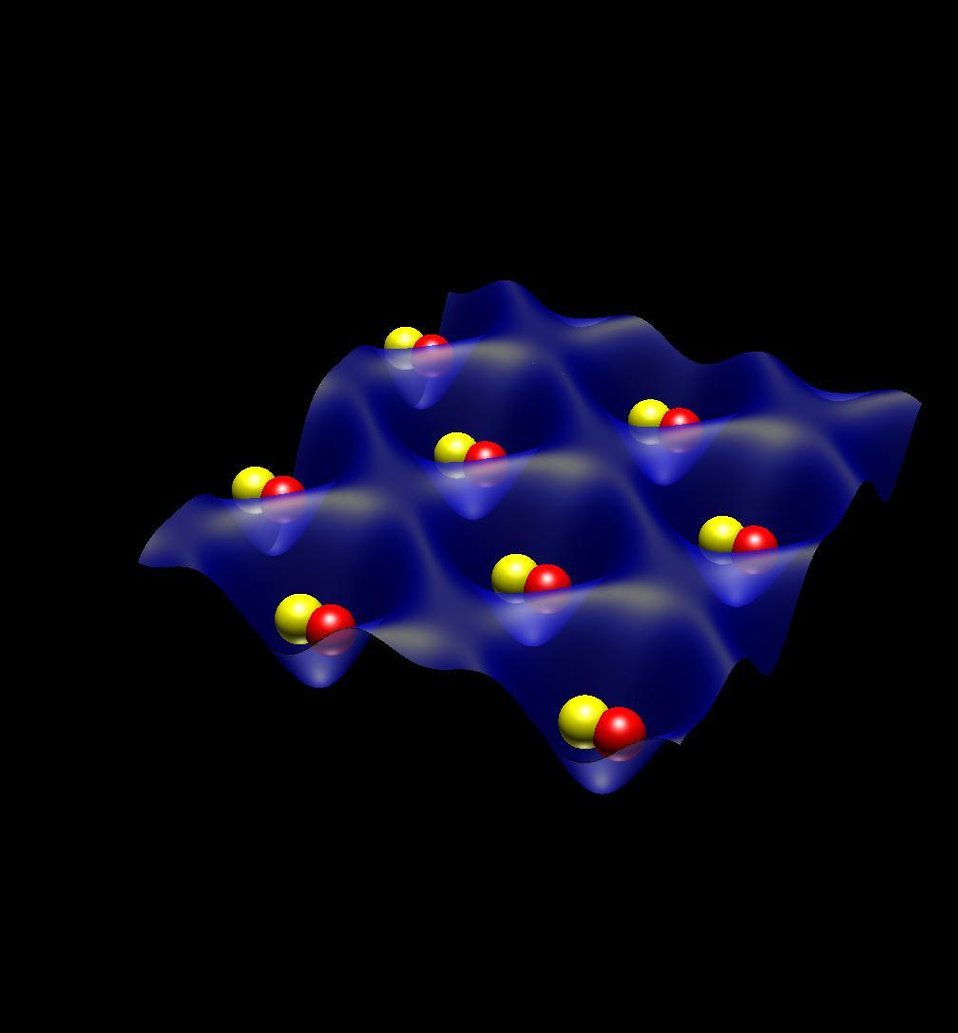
Thousands of Atoms Swap 'Spins' with Partners in Quantum Square Dance

Thousands of pairs of rubidium atoms participate in a 'quantum square dance' that may be useful in quantum computers.